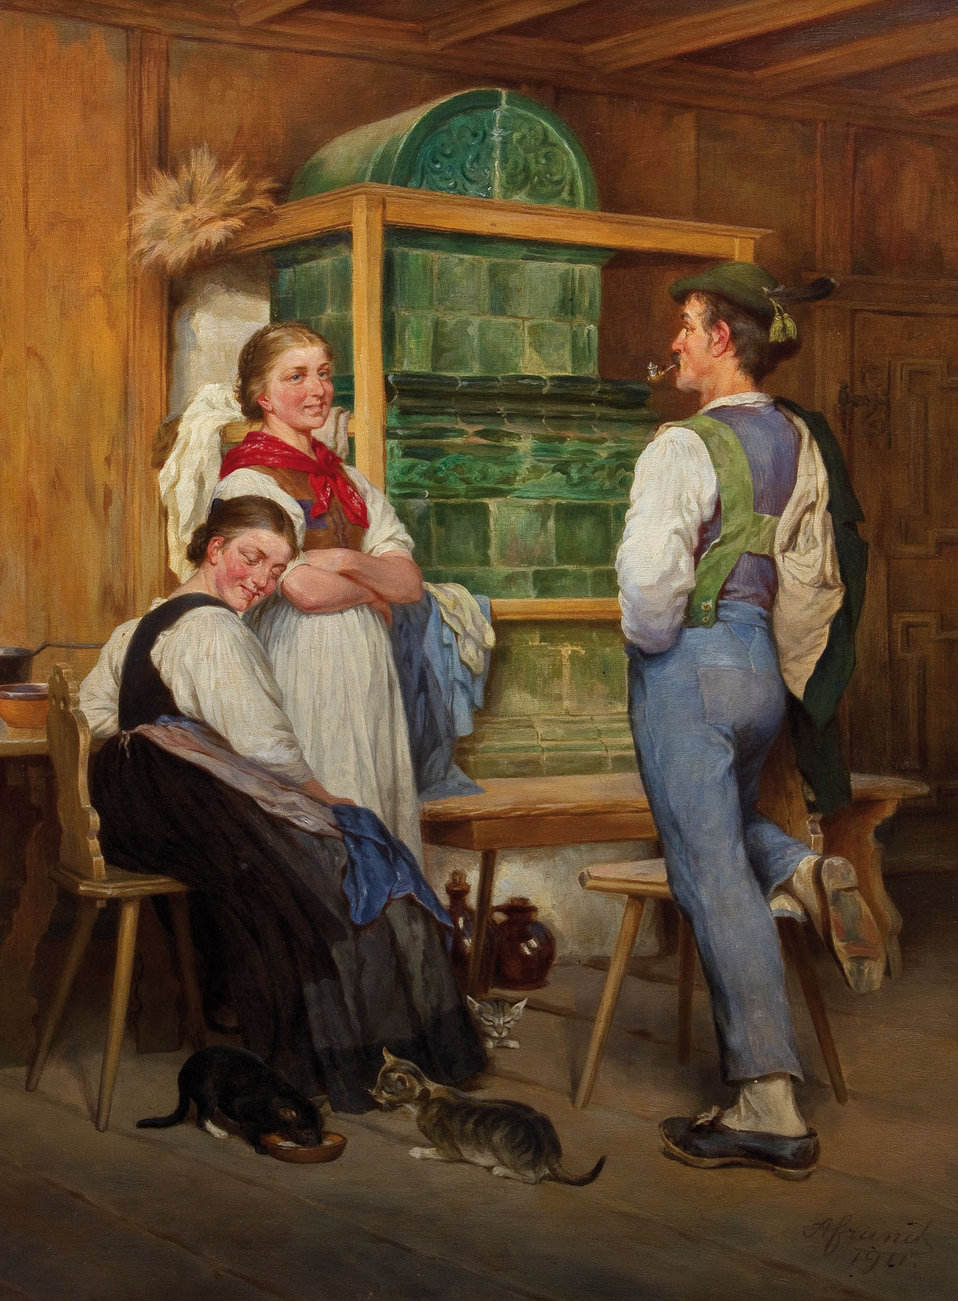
In der guten Stube. Öl auf Leinwand. Unten rechts signiert und datiert A. Franck 1911.. 78 x 60,5 cm